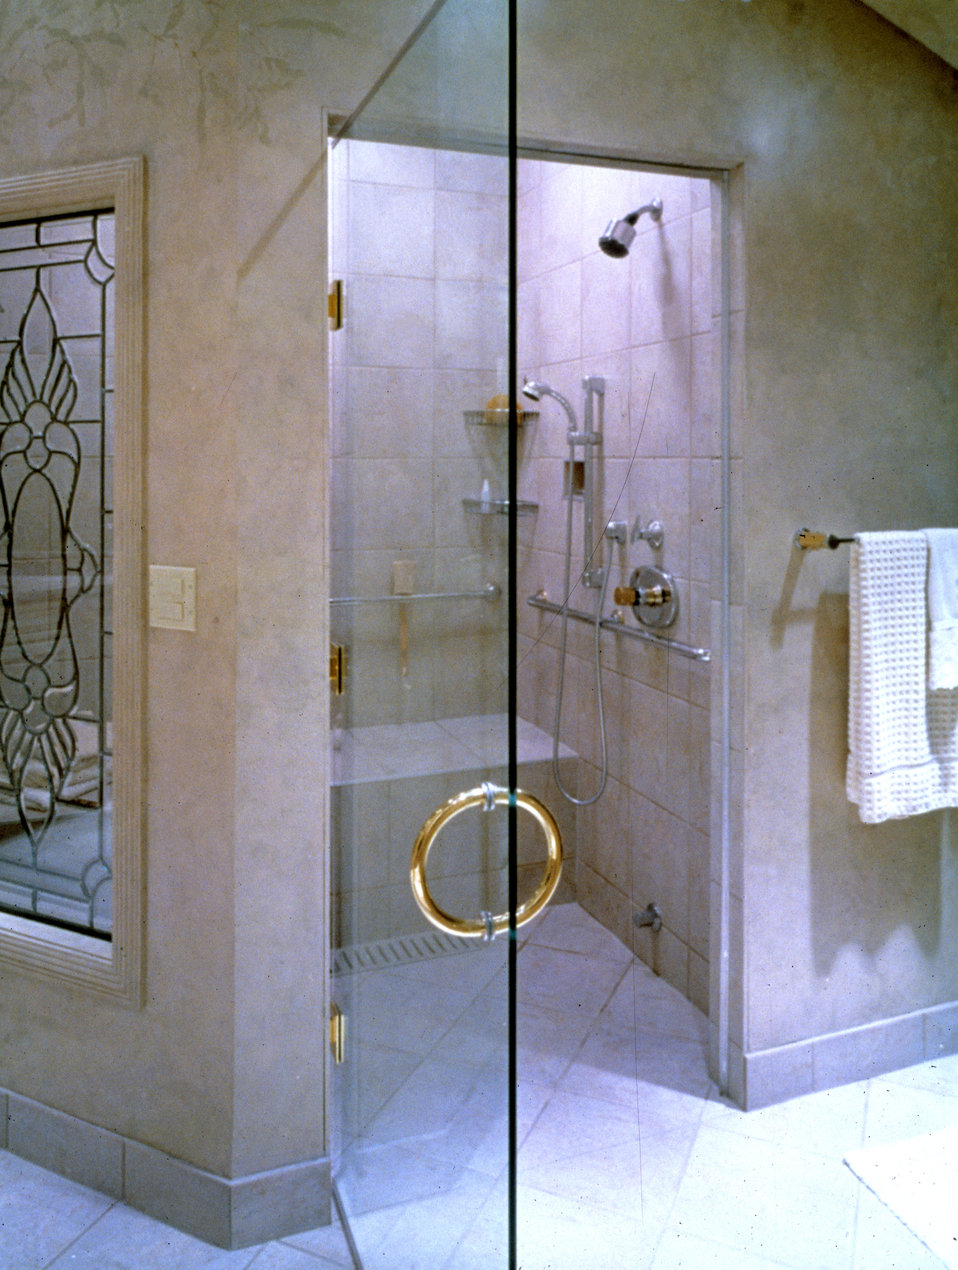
This image depicted an example of a shower door design where users who might be mobility impaired could possibly be amongst those who'd be using this shower stall. Taking into account the needs of people who are physically challenged, and incorporating design modifications that would accommodate such individuals, makes for a final product, which is more easily used by all. For showers to be considered more accessible by a wide range of people with differing abilities, the entry door must have an easy to use handle, low or no threshold, and be wide enough to permit a shower chair to pass. This example elegantly incorporated all of these features into an attractive solution.